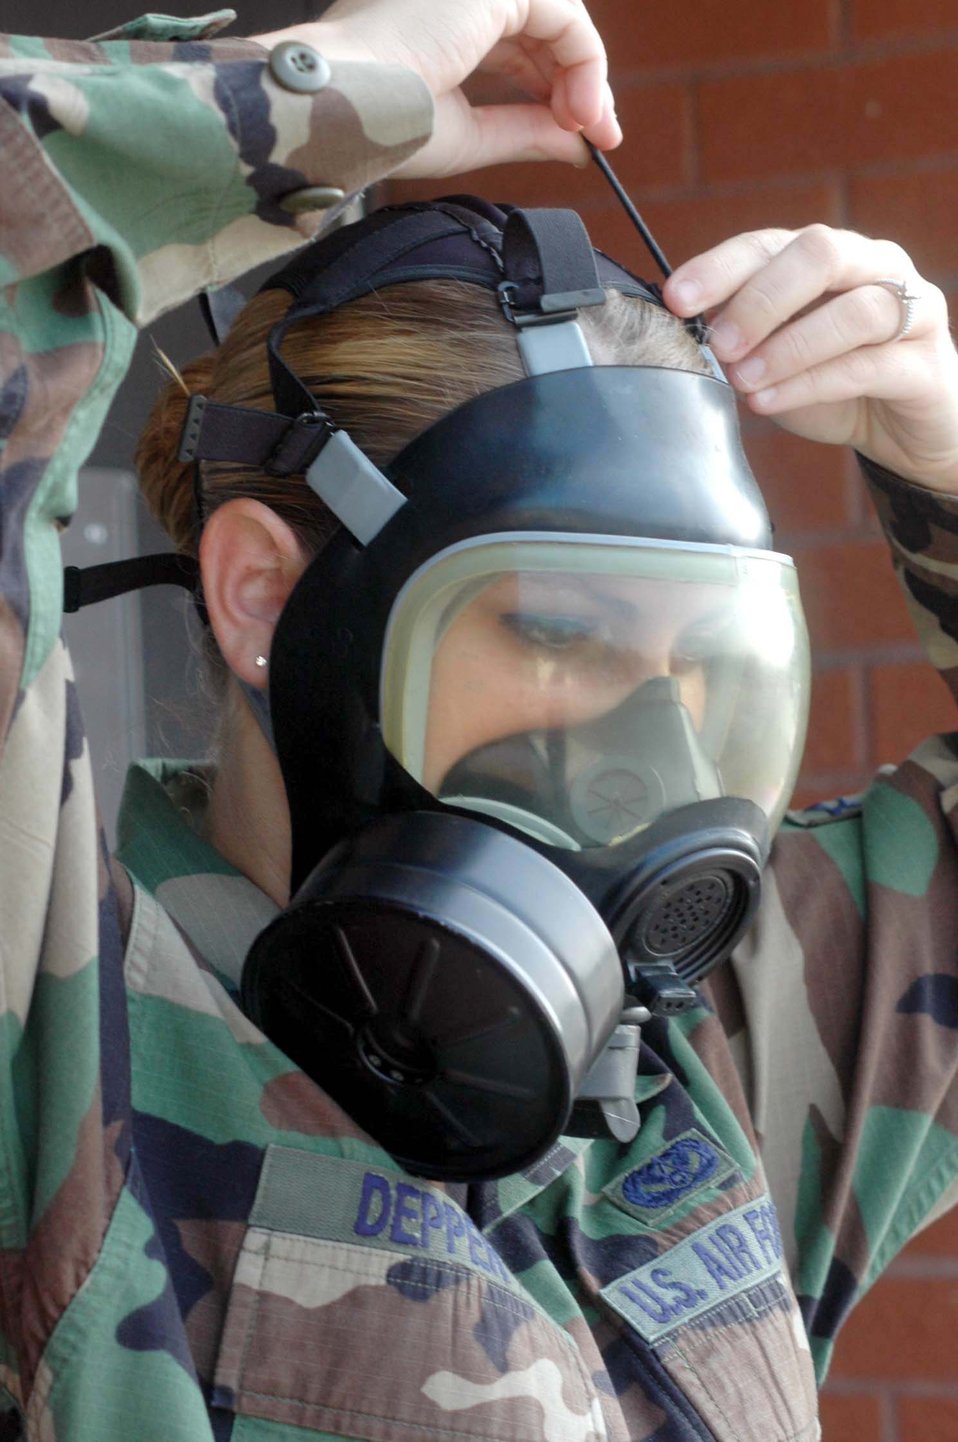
New protective layer

ROBINS AIR FORCE BASE, Ga. -- Airman 1st Class Kelley Deppen demonstrates the MCU-2A/P gas mask fitted with the